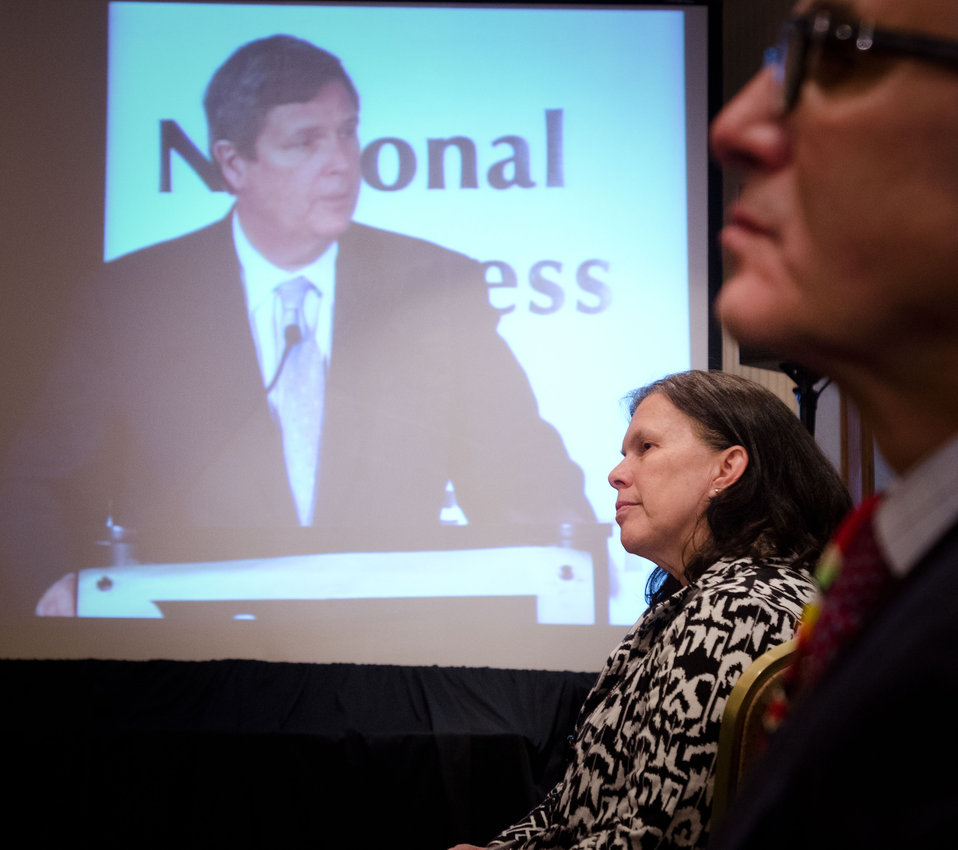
Agriculture Secretary Tom Vilsack (on screen) spoke with the National Congress of American Indians Tribal Nations Legislative Summit in Washington, D.C., on Wednesday March 7, 2012. Secretary Vilsack has made improving relations with Native American Tribes a priority by creating the Office of Tribal Relations, led by his Senior Advisor Janie Hipp (black and white coat), listened to Agriculture Secretary Tom Vilsack speech at the National Congress of American Indians Tribal Nations Legislative Summit in Washington, D. C. on Wednesday March 7, 2012. Secretary Vilsack made improving relations with Native American Tribes a priority by creating the Office of Tribal Relations, led by Janie Hipp. This supports his directive to make USDA agencies more aware of tribal issues and engage in Tribal consultation and collaboration. Secretary Vilsack reiterated USDA’s support to native communities with financial support for electric, broadband and wastewater infrastructure, and provides native families and businesses with home loans and business grants. Secretary Vilsack emphasized USDA’s participation in the First Lady’s Lets Move in Indian Country initiative to combat childhood obesity in tribal communities.